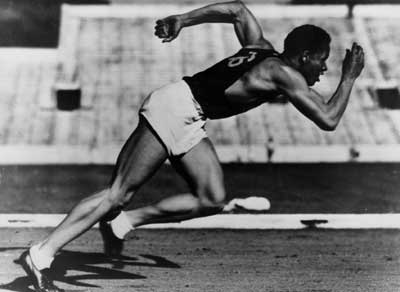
Archie Williams at the 1936 Olympics in Berlin